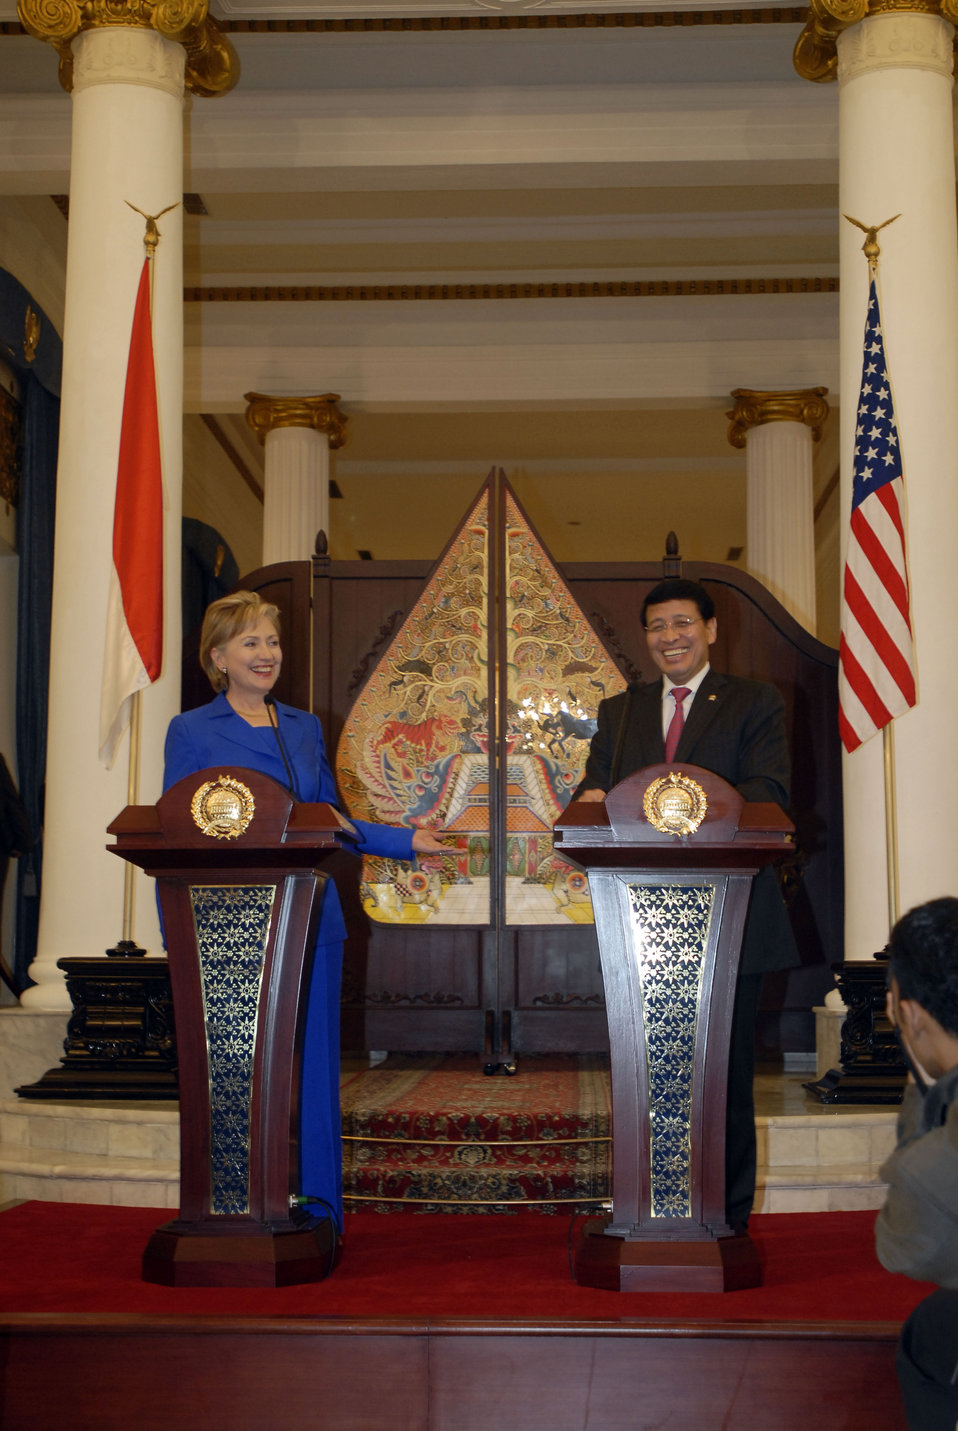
Secretary Clinton With Indonesian Foreign Minister

Secretary Clinton with the Indonesian Foreign Minister, Mr. Hassan Wirajuda, at the Joint Press Conference in Jakarta, Indonesia, Feb. 18, 2009.